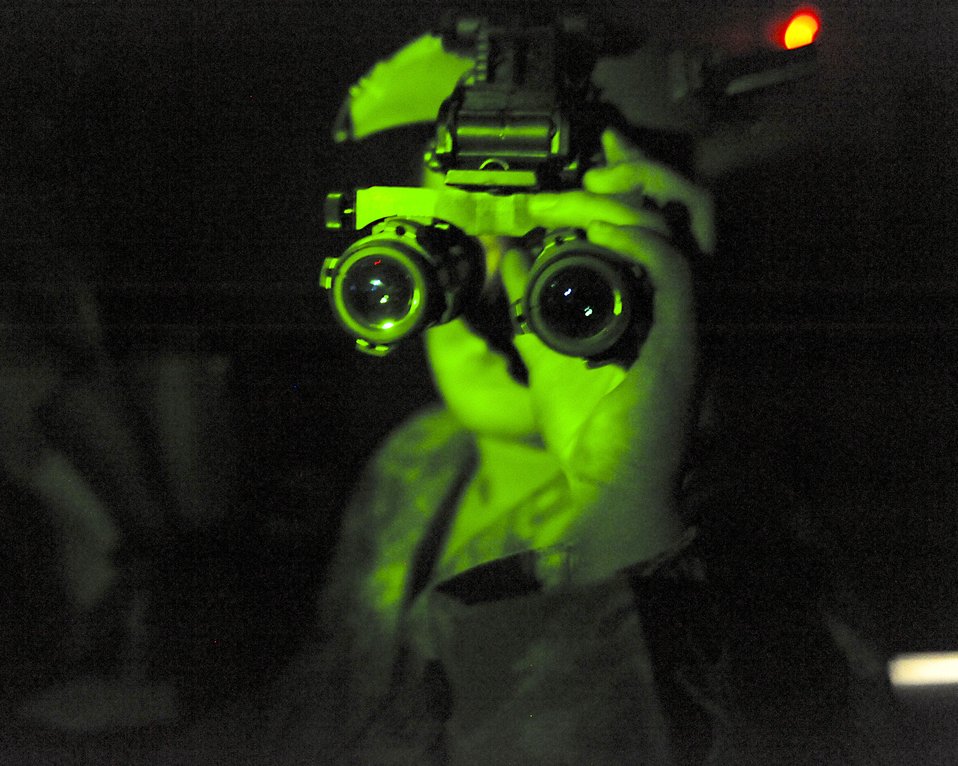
Can't hide from me

Airman 1st Class Jill Brumley checks out night vision goggles May 6, 2010, at Elmendorf Air Force Base, Alaska. She is an aircrew flight equipment specialist with the 19th Fighter Squadron.